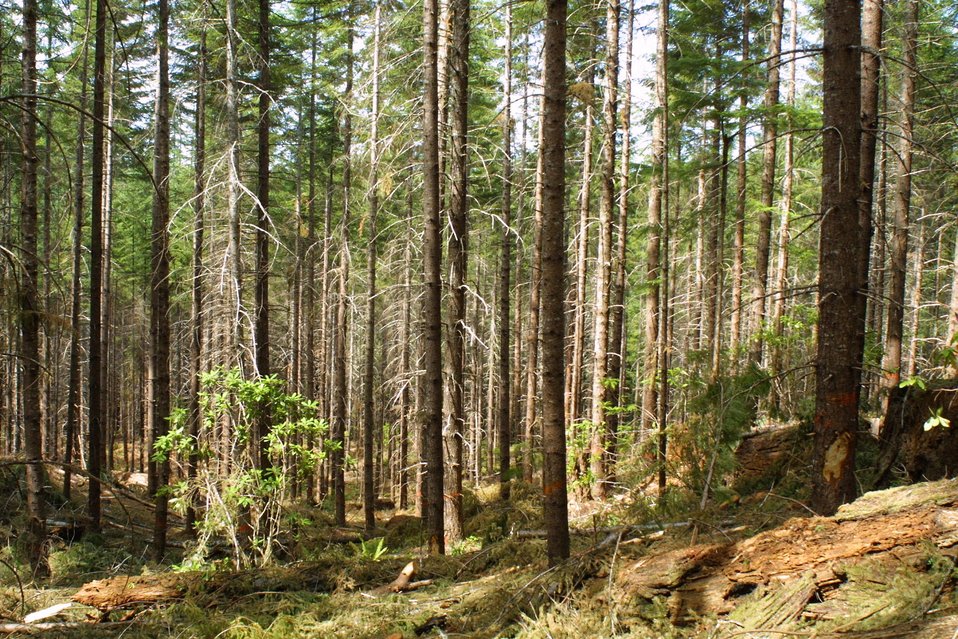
Camas East Timber Sale in Late Successional Reserve.